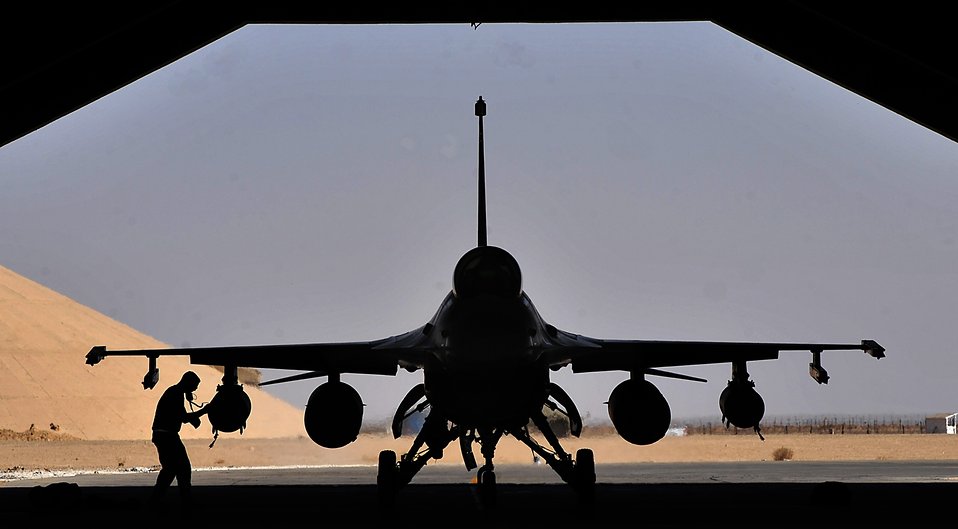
Ready for action

A weapons loader from the 125th Expeditionary Fighter Squadron performs a post-flight check on an F-16 Fighting Falcon Oct. 1, 2011, after its arrival in Iraq. The squadron deployed in support of Operation New Dawn and will provide clos- air support for more than 40,000 troops leaving Iraq by the end of the year.